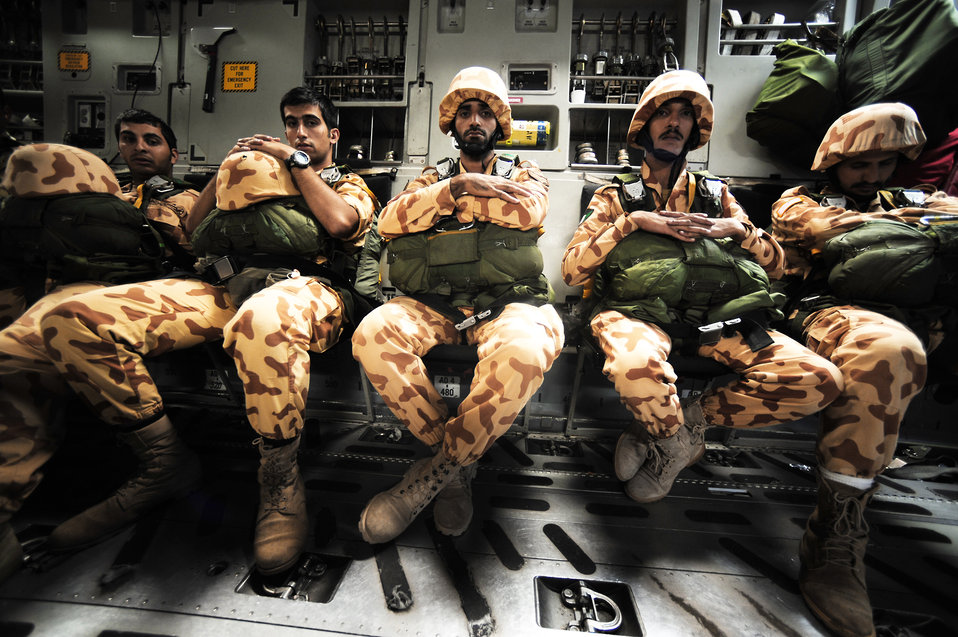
Friendship jump over Egypt

Kuwaiti paratroopers wait aboard a U.S. Air Force C-17 Globemaster III before a